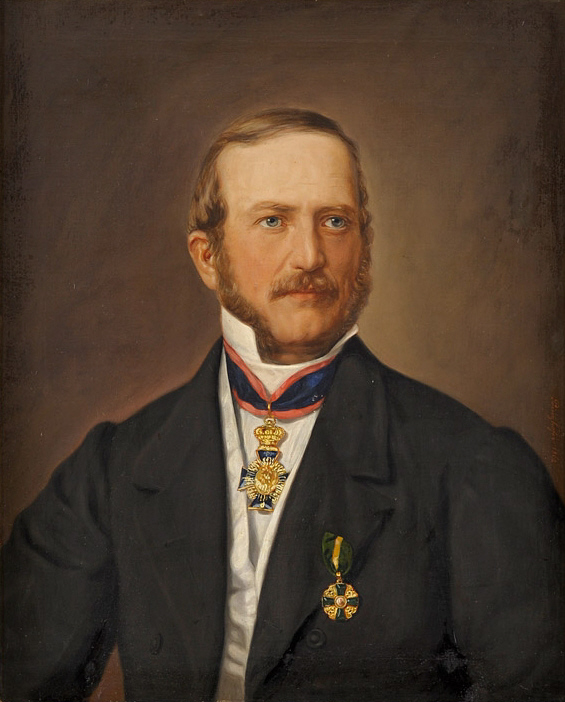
August Prinzhofer Portrait eines Ordenträgers 1862